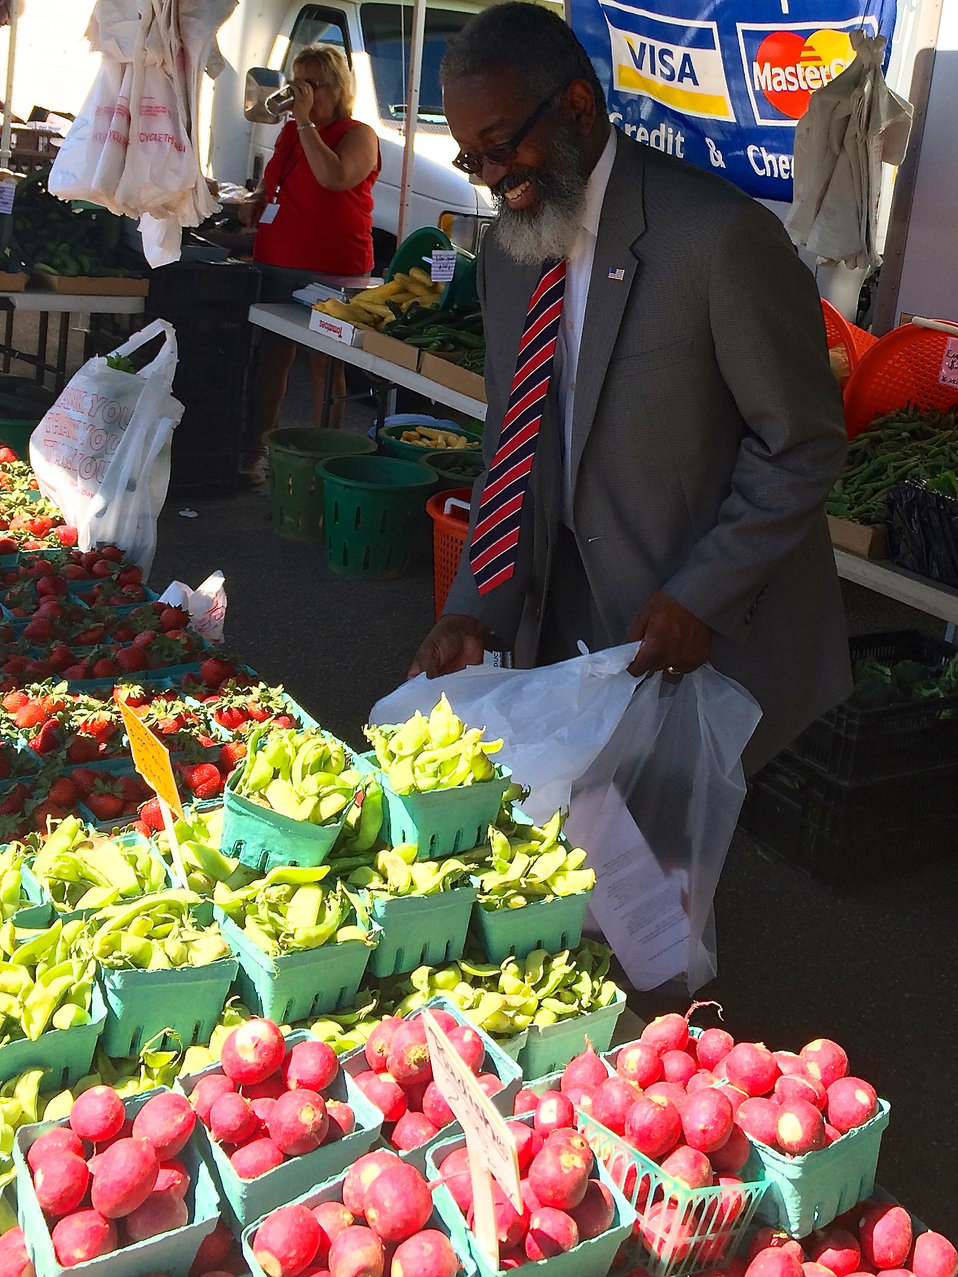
Dr Parham at the USDA Farmers Market Opening

U.S. Department of Agriculture (USDA) Departmental Management Assistant Secretary Dr. Gregory Parham shops for fresh produce on the opening day of USDA's Farmers Market in the east parking lot of USDA on Friday, Jun. 6, 2014. Dr. Parham spoke about USDA’s commitment to supporting our active duty military, reservists, veterans and military families.